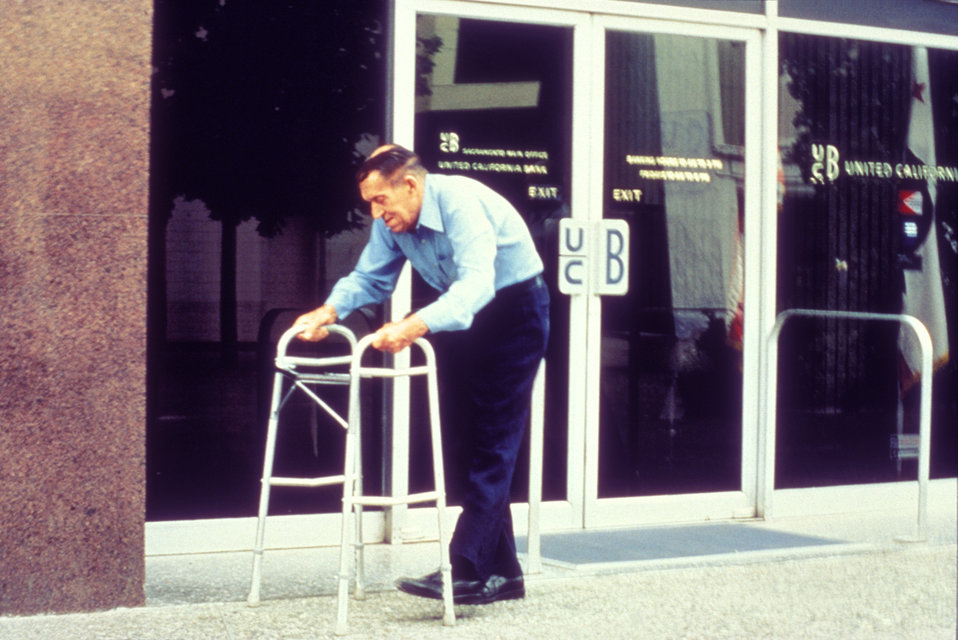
This 1990 image depicted a man who was using walker while traversing a public sidewalk. The path was 'smooth', but not slick, which is especially important in the case of those using such walkways, who are mobility-impaired with gait abnormalities. People who walk with the assistance of mobility aids such as canes, crutches, leg braces, and walkers must be considered in the design of public spaces, which also makes it safer for everyone else as well.